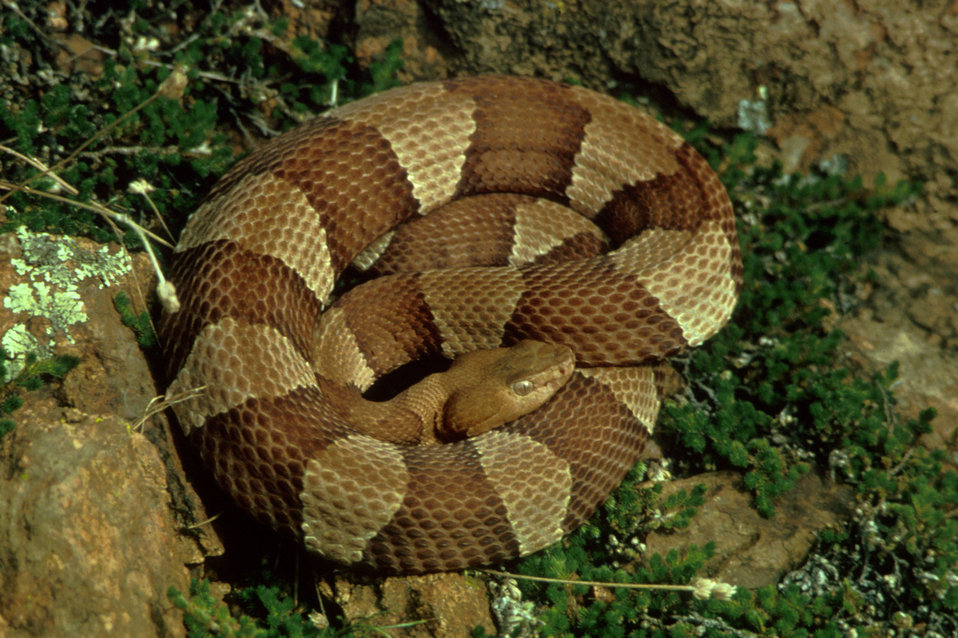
Broad-banded copperhead coiled in vegetation.